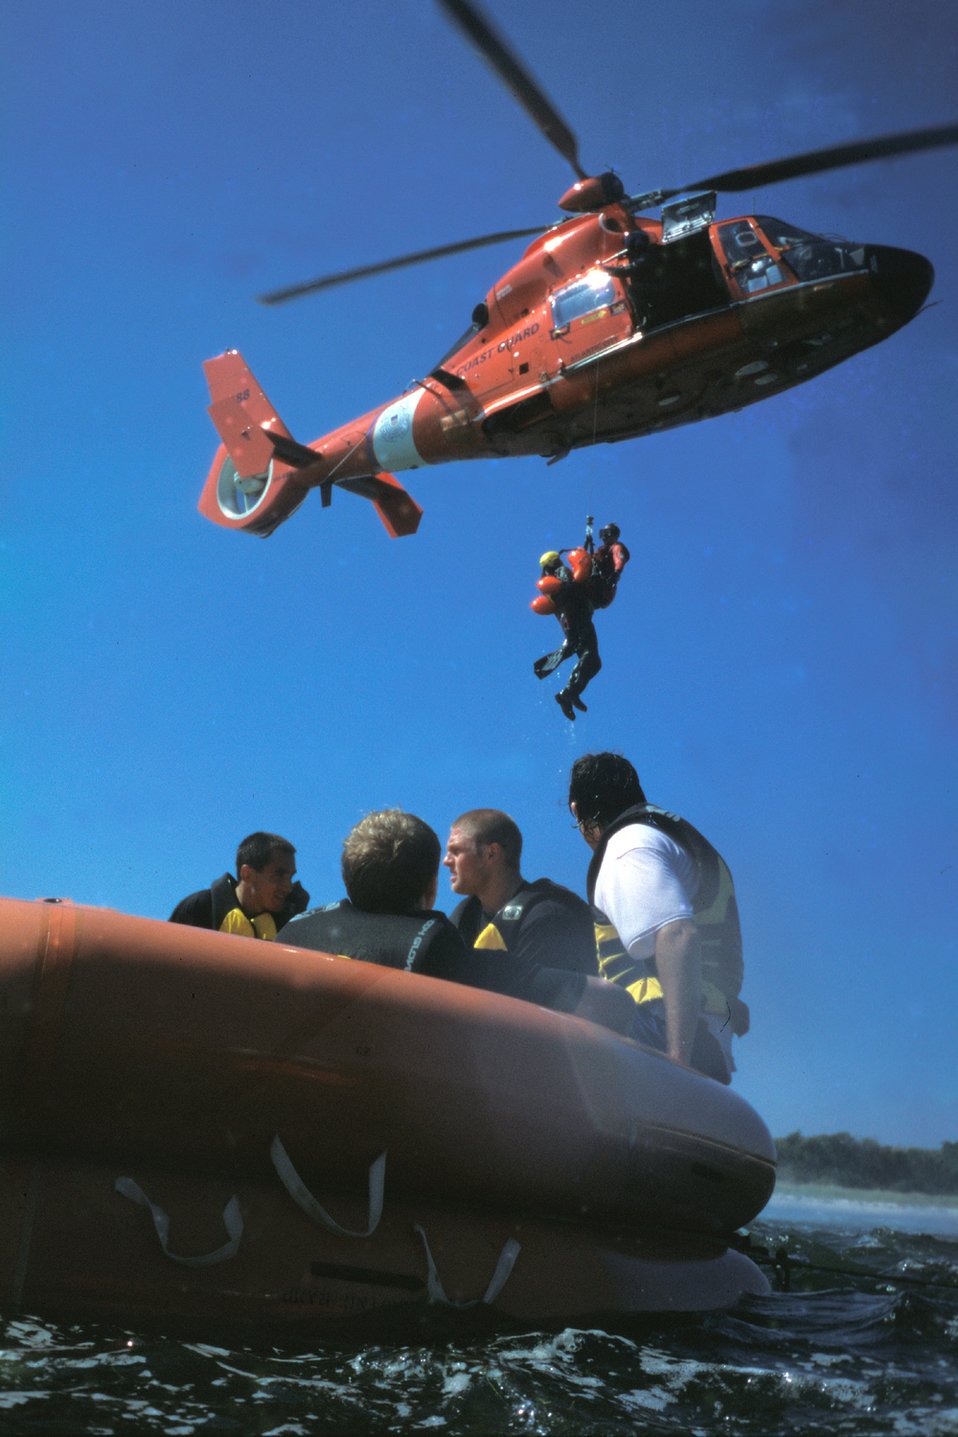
Making a splash off the

LONG ISLAND BEACH, N.J. -- Coast Guardsmen in an HH-65 Dolphin Helicopter from the Atlantic City Coast Guard hoist an aircrew member from nearby McGuire Air Force Base during an Air Force water-survival exercise training here recently. Players from the Philadelphia Phantoms American Hockey League team (in raft) participated in the survival exercise as part of their training camp workout.